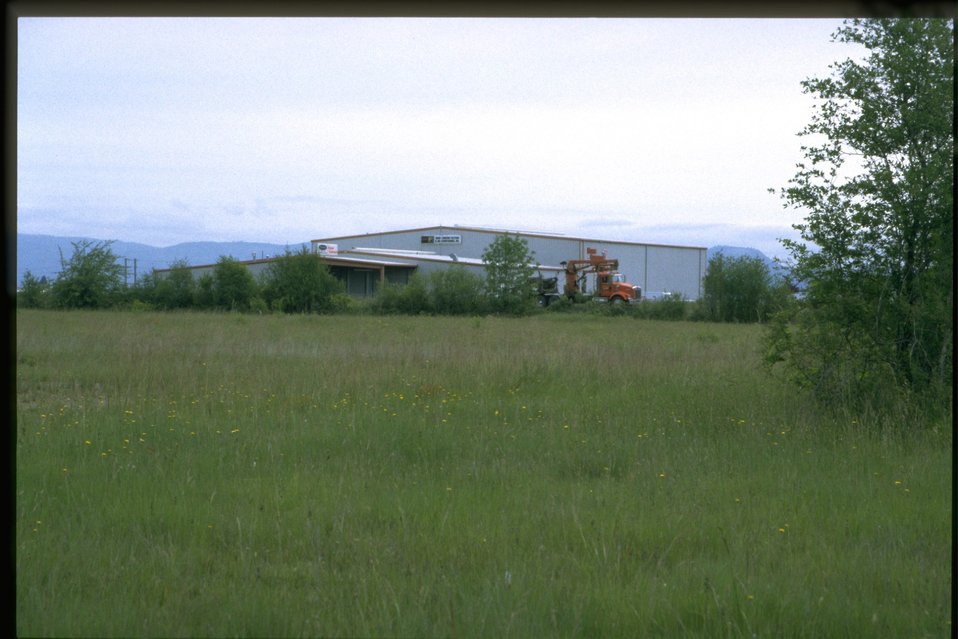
Wildflowers in an urban setting.